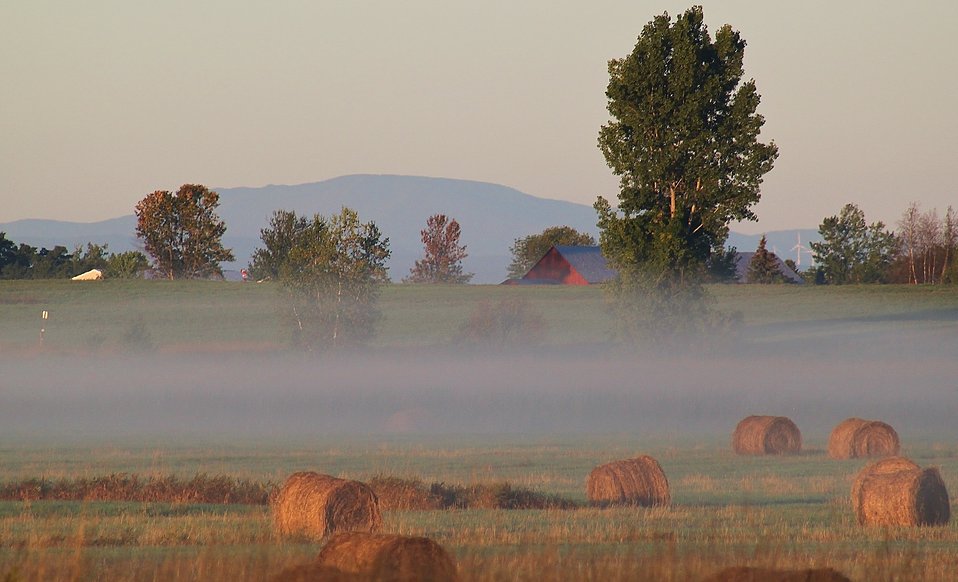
Hay field

Grassland fog over hay bales at Missisquoi National Wildlife Refuge